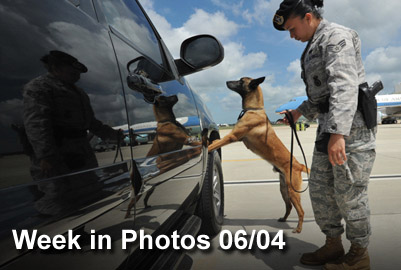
Week in Photos

Air Force Week in Photos for June 4, 2010, highlights photos from around the Air Force. In this photo by Bobby Jones, Senior Airman Salema Panama and her military working dog partner